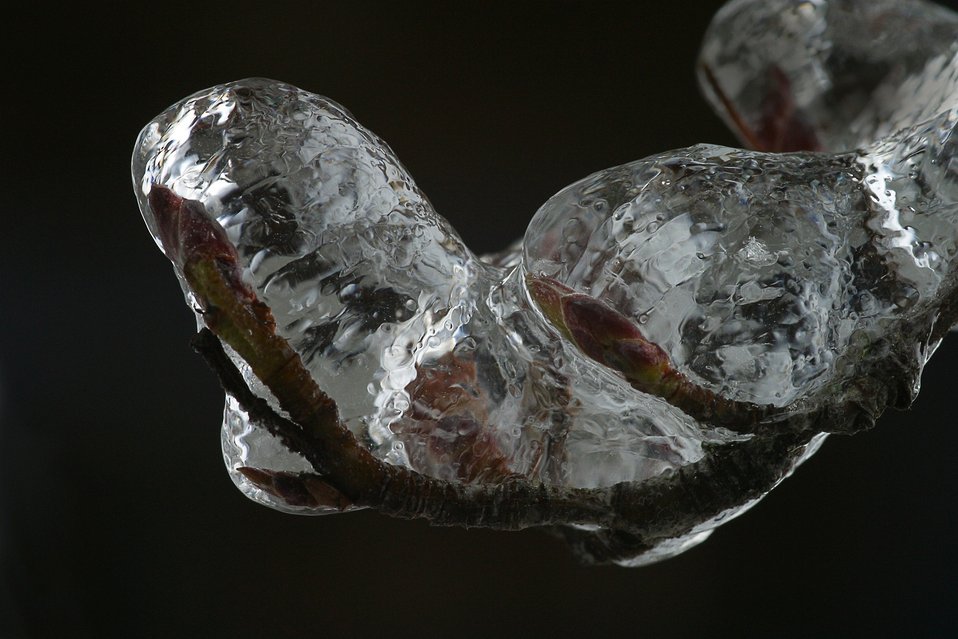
Ice on Service Berry branch.